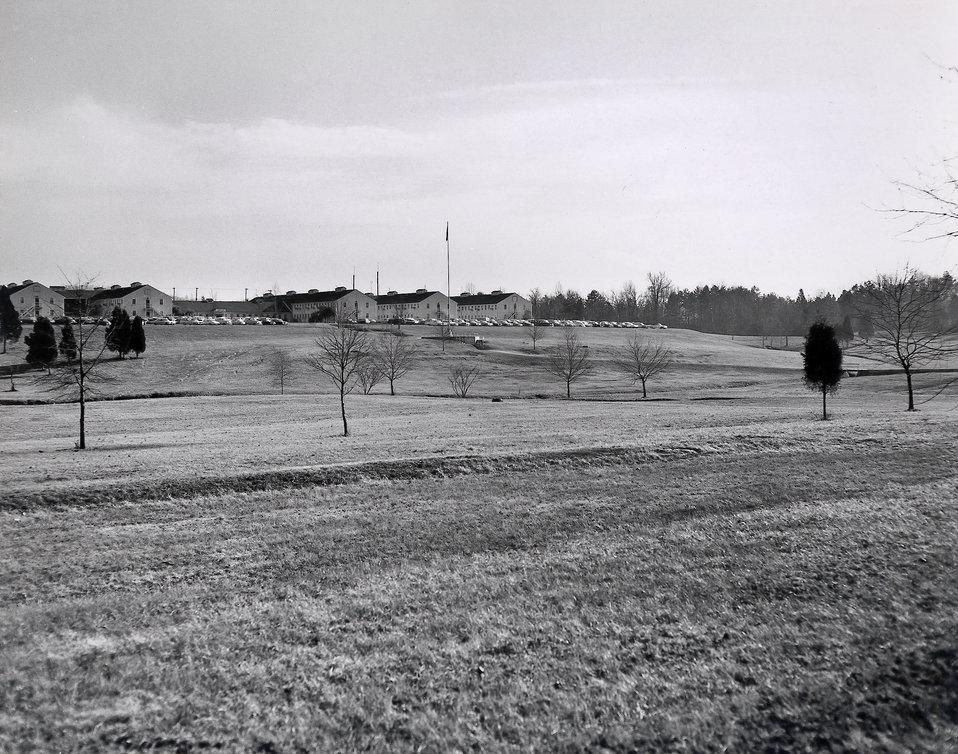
AEC Adm Proped Site for New Bldg. Oak Ridge

65-52 DOE photo Ed Westcott 6-15-1965 Oak Ridge Tennessee